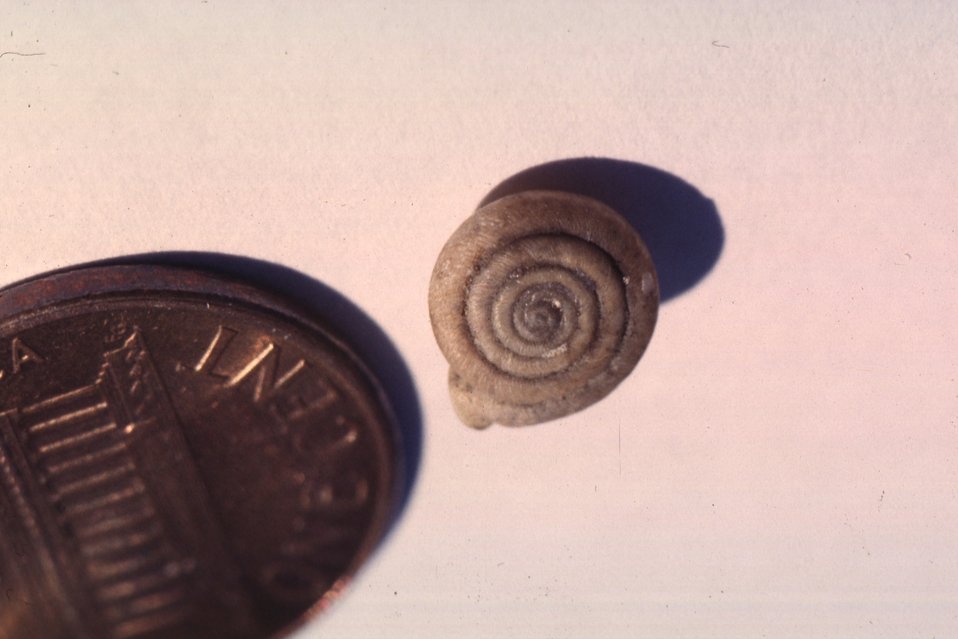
Shasta chaparral (Trilobopsis roperi).